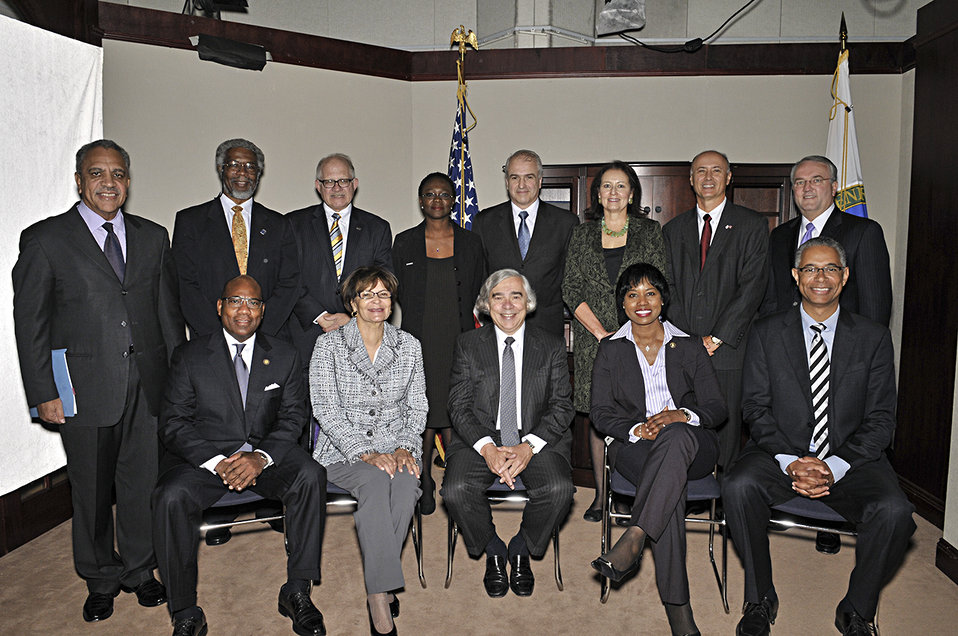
Speakers for the Launch of the Minorities in Energy Initiative

Panelists for the launch event gather for a photo. The Office of Economic Impact and Diversity kicked off the Minorities in Energy Initiative on September 24, 2013, with Secretary Ernest Moniz.